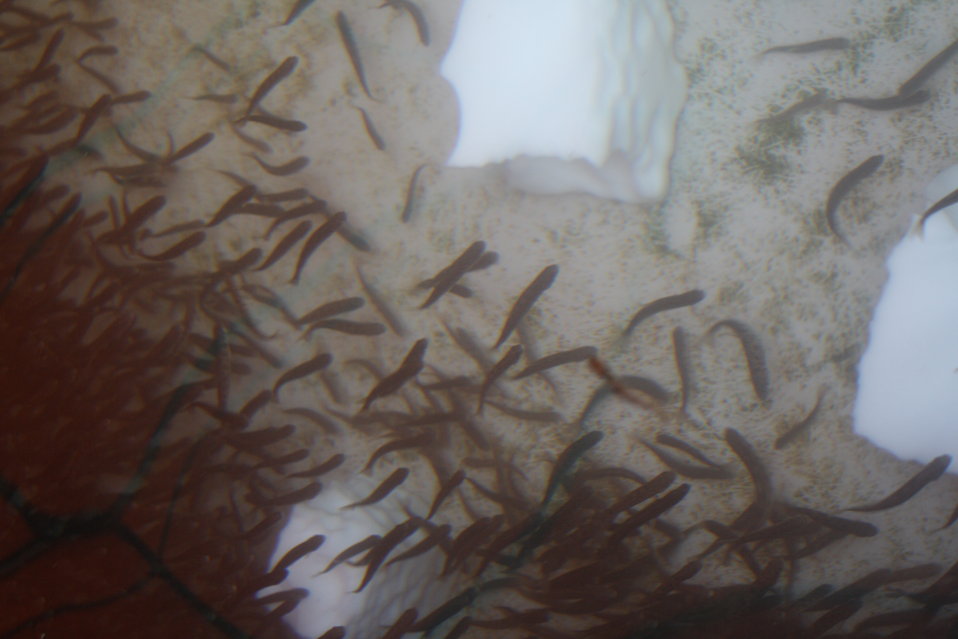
Lake trout in circular fish rearing pool

After flood waters from Hurricane Irene receded, biologists add salt blocks to circular fish rearing pools to assist fish (lake trout) in healing and clearing sediment from their gills.